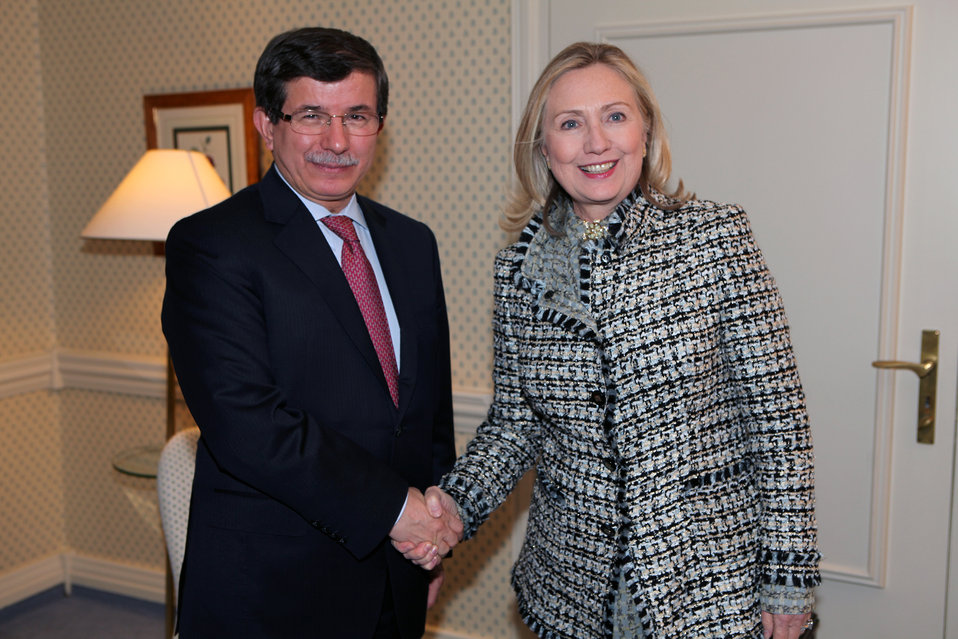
Secretary Clinton Meets With Turkish Foreign Minister Davutoglu

U.S. Secretary of State Hillary Rodham Clinton meets with Turkish Foreign Minister Ahmet Davutoglu in Munich, Germany, on February 4, 2012.